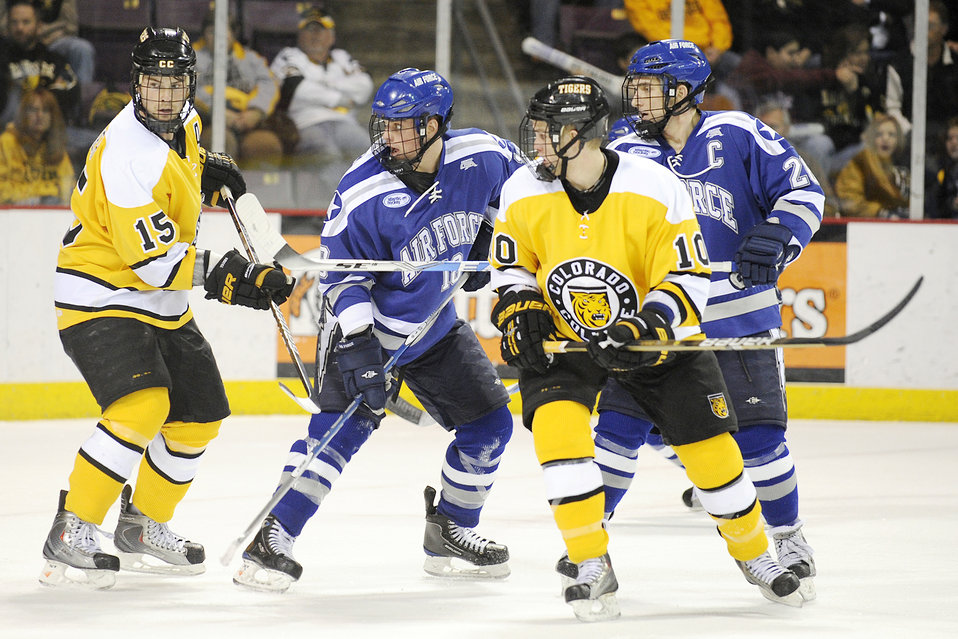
Falcons lose in match with Colorado Tigers

Colorado College's Gabe Guentzel and Nate Prosser battle in front of the net with Falcons forwards Kyle De Laurell and Jeff Hajner as the Tigers beat Air Force 2-0 in a non-conference hockey game Feb. 5, 2010, at the World Arena in Colorado Springs, Colo..